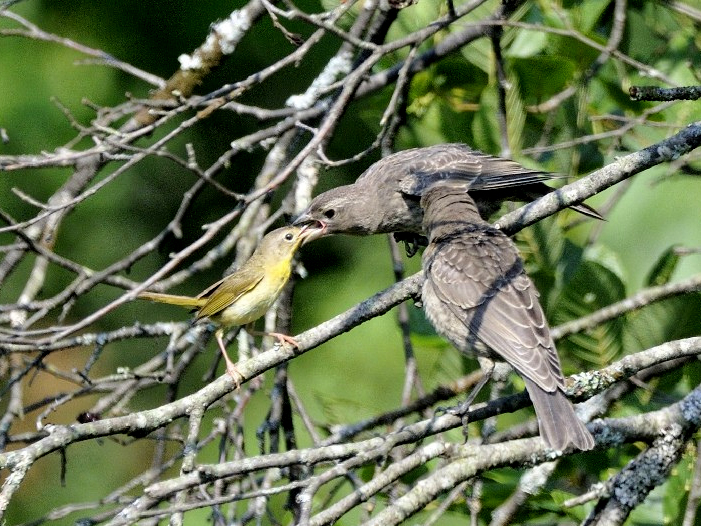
Photo of the Week - Yellowthroat Feeding Cowbird (MA)

Photo of the Week - 7/16/12

Adult female Common Yellowthroat feeding a recently fledged Brown-headed Cowbird at the Wentworth Farm Conservation Area in Amherst, MA.